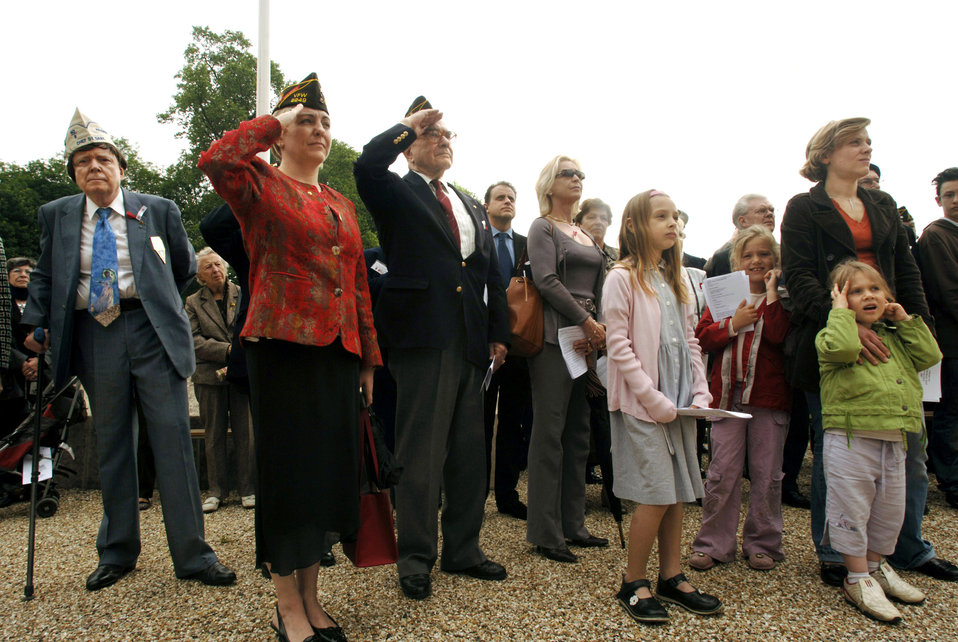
Early aviators memorialized

French and American citizens pay homage to the United States' first combat aviators, comprising the Lafayette Escadrille, during a ceremony at the Lafayette Memorial outside Paris. The all-American squadron of volunteers flew under the French flag during World War I where many gave their lives.